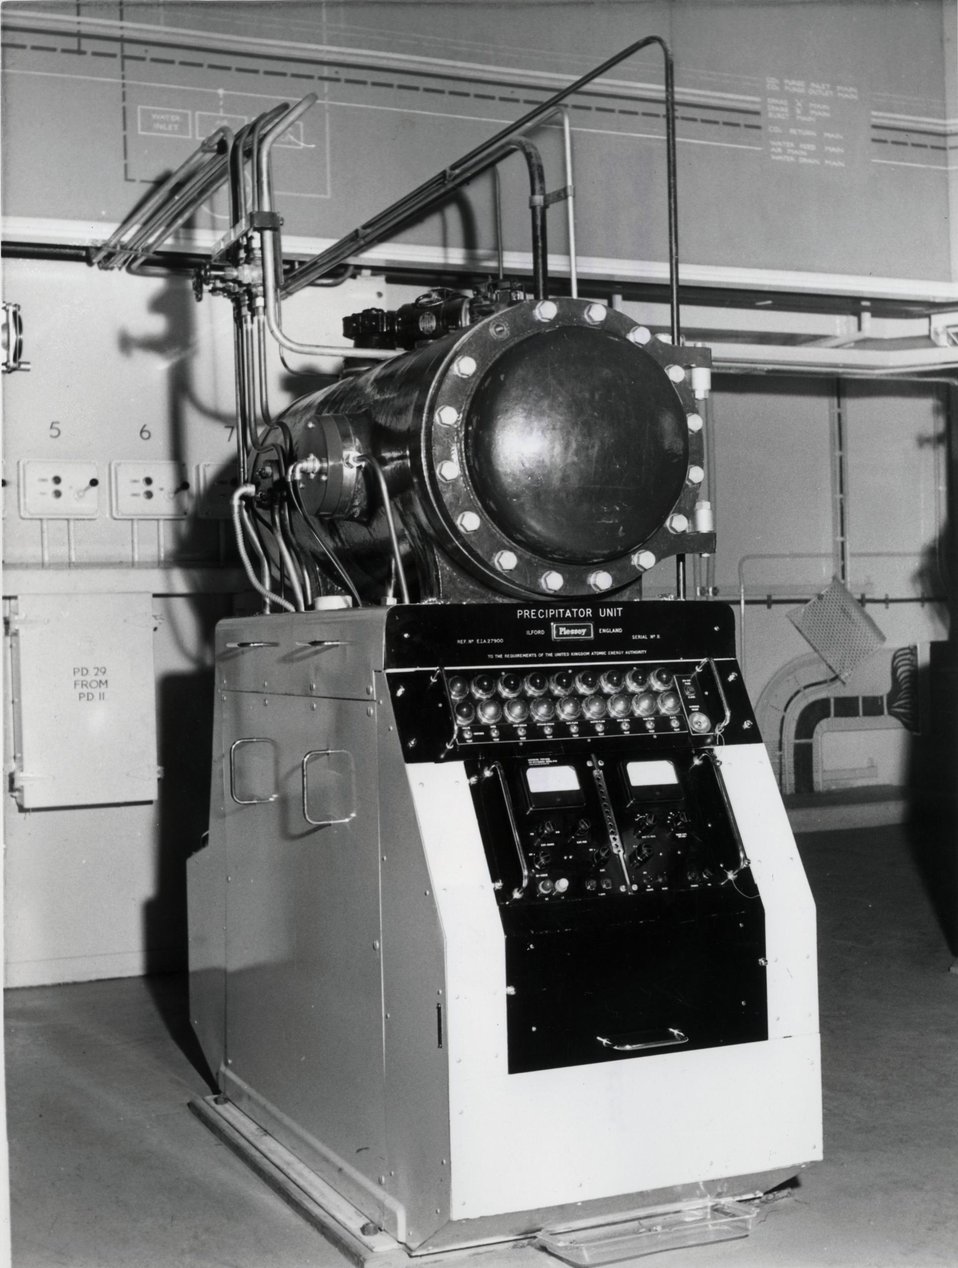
Britain's First Atomic Power Station, Calder Hall, Cumberland. Precipitation units of the 'sniffer' apparatus in the burst slug detector control room in No. 1 reactor of the Calder Hall A power station. c. 1956